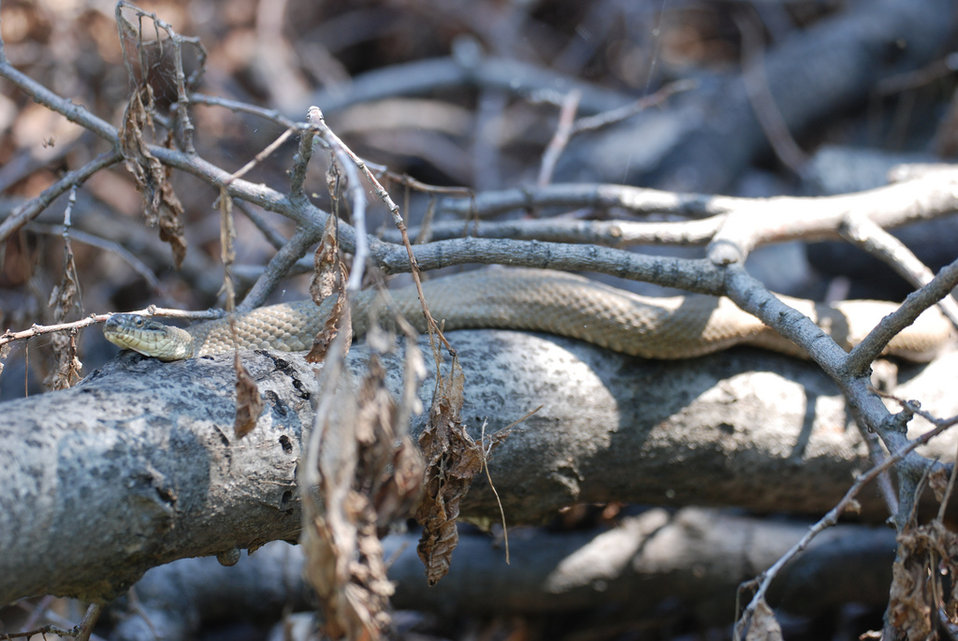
Recovered Lake Erie watersnake (Nerodia sipedon insularum)